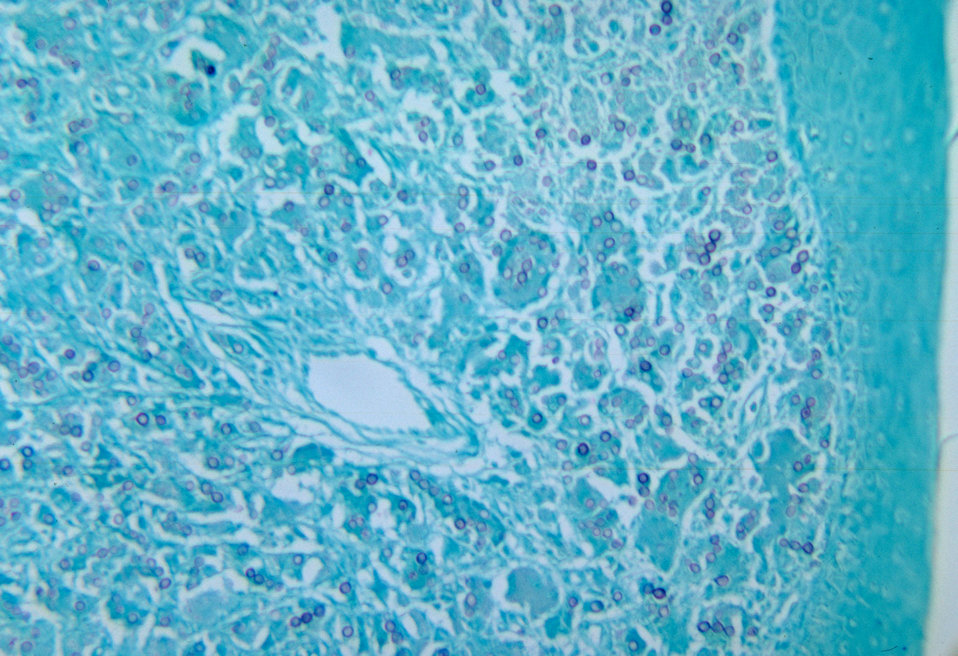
Using methenamine silver stain, this micrograph depicts the histopathologic changes associated with lobomycosis of the skin.